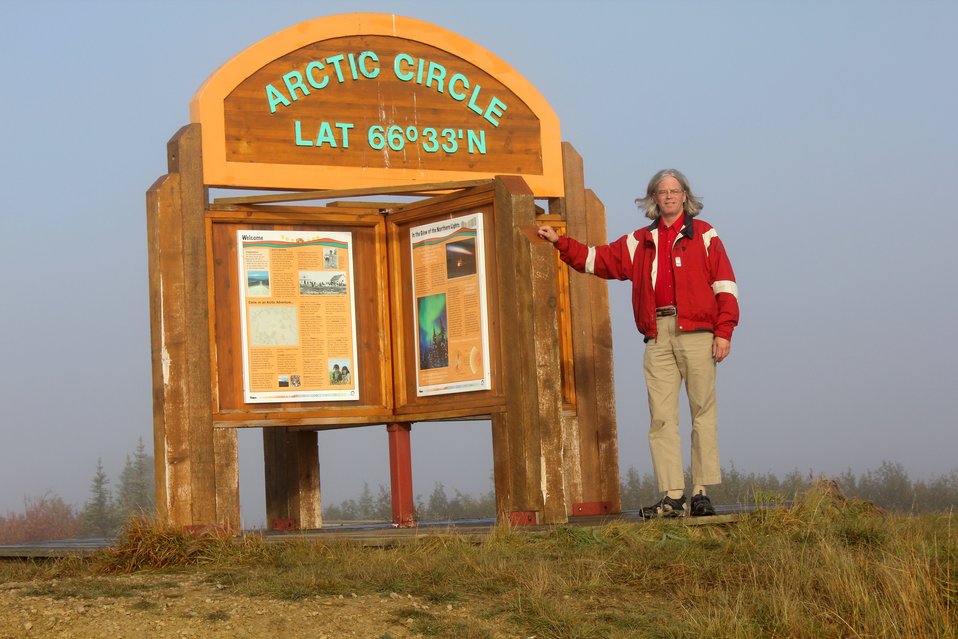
Dr. John Cloud north of the Arctic Circle (just north).